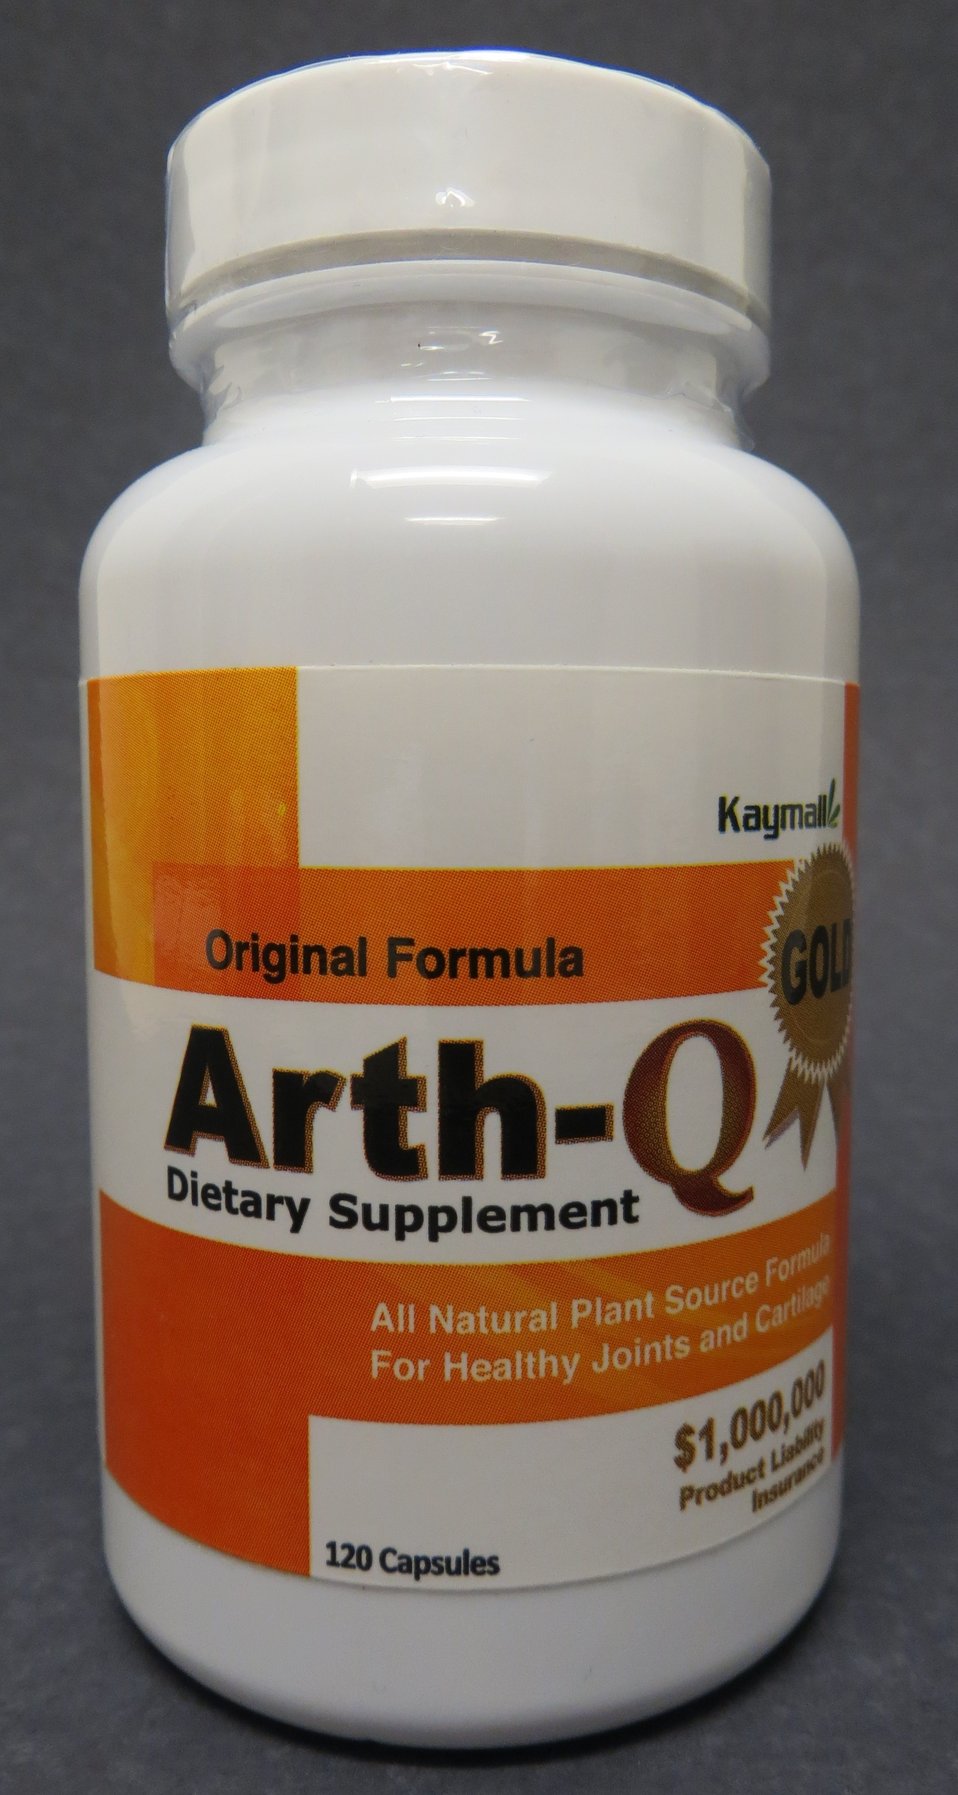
Arth-Q

February 13, 2014 - The FDA is advising consumers not to purchase or use Arth-Q, a product promoted and sold as a dietary supplement for joint, muscle and arthritic pain. The product was found to contain undeclared ibuprofen.